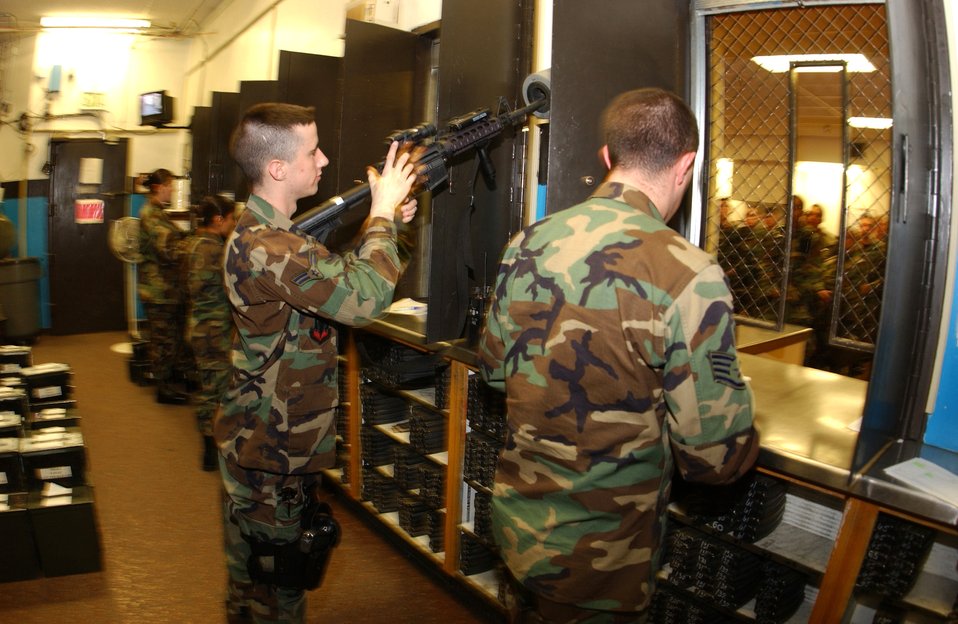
Shift change

Airman 1st Class Matt Davis clears his weapon as other Airmen prepare supplies for issue before a shift change at the 5th Security Forces Squadron on Friday, April 21, 2006, at Minot Air Force Base, N.D.